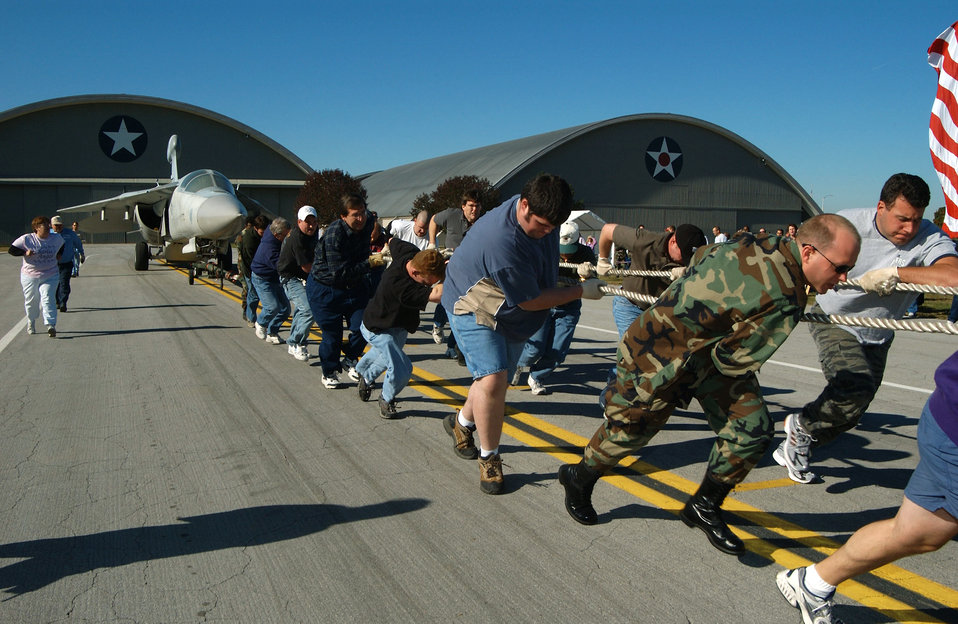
Pulling for charity

DAYTON, Ohio -- A men's team participates in the 6th annual Combined Federal Campaign Aircraft Pull event at the Air Force Museum here Oct. 5. Male, female and coed teams competed to see who could pull a 60,000-pound EF-111 Raven the farthest in 45 seconds. The farthest pull was 338 feet, 11 inches by a men's team. In all, 26 teams competed and raised $5,400 for CFC charities.